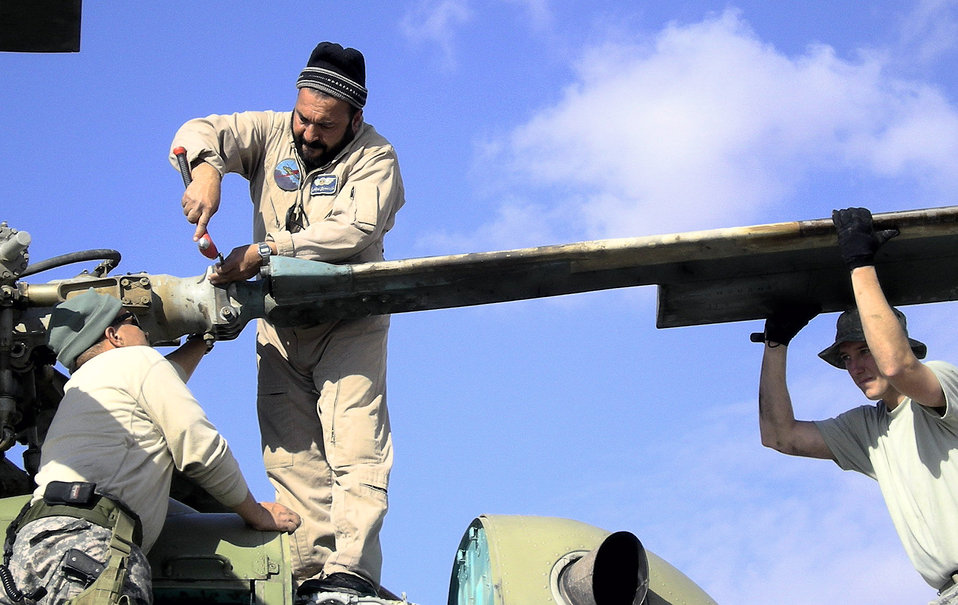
Airmen advise Afghans on Russian-made helicopters

Tech. Sgt. Dennis Flanagan advises Afghan air corps maintainers on the Russian-made MI-17 transport helicopter March 2 at Kandahar Air Base, Afghanistan. Sergeant Flanagan is assigned to the 718th Aircraft Maintenance Squadron from Kadena Air Base, Japan.